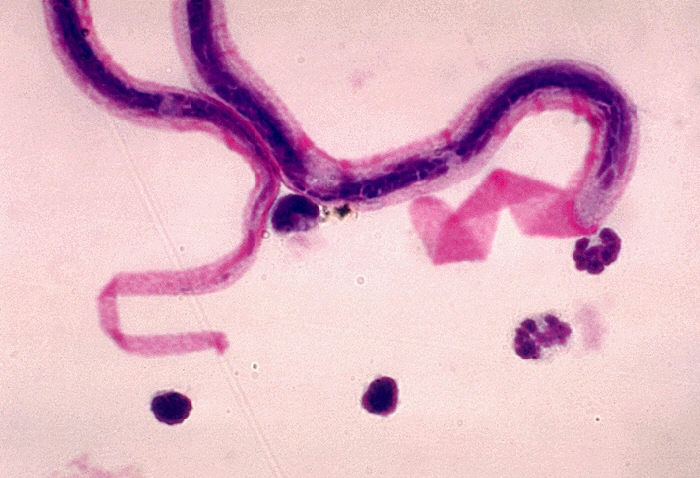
This photomicrograph depicts the parasite, Brugia malayi, which is the agent of filariasis.